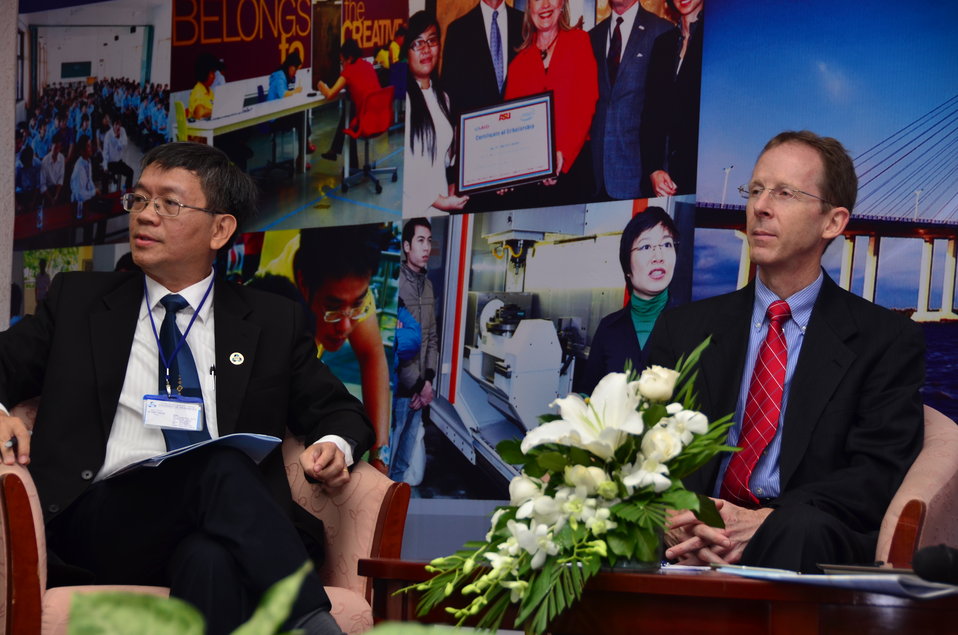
USAID Mission Director Joakim Parker speaks at the HEEAP Conference

March 19, 2013, Can Tho.